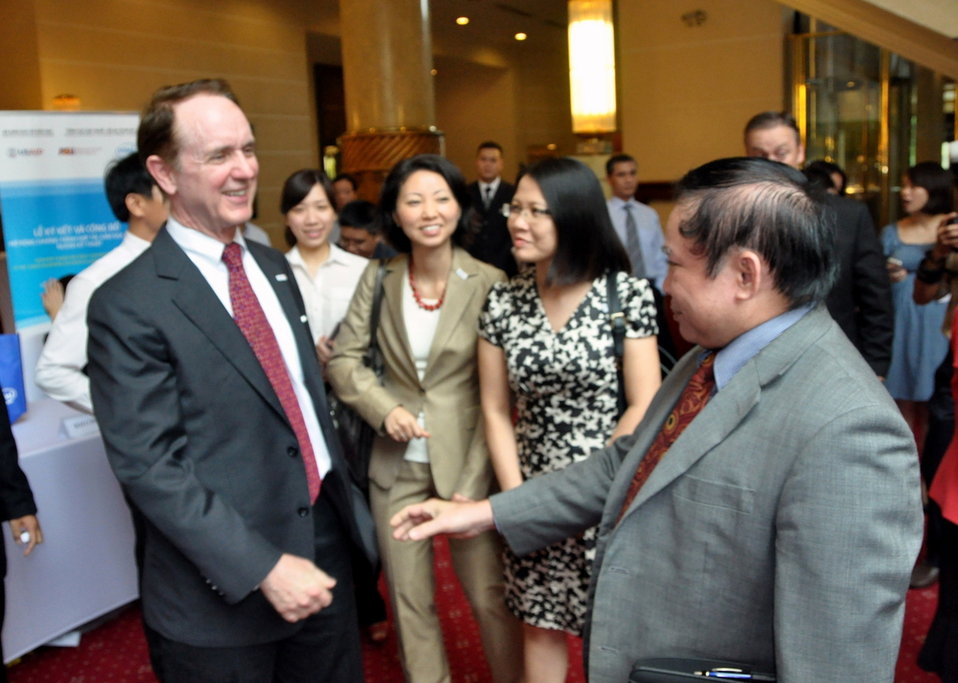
Higher Engineering Education Alliance Program Expansion Launch

Hanoi, August 20, 2012.